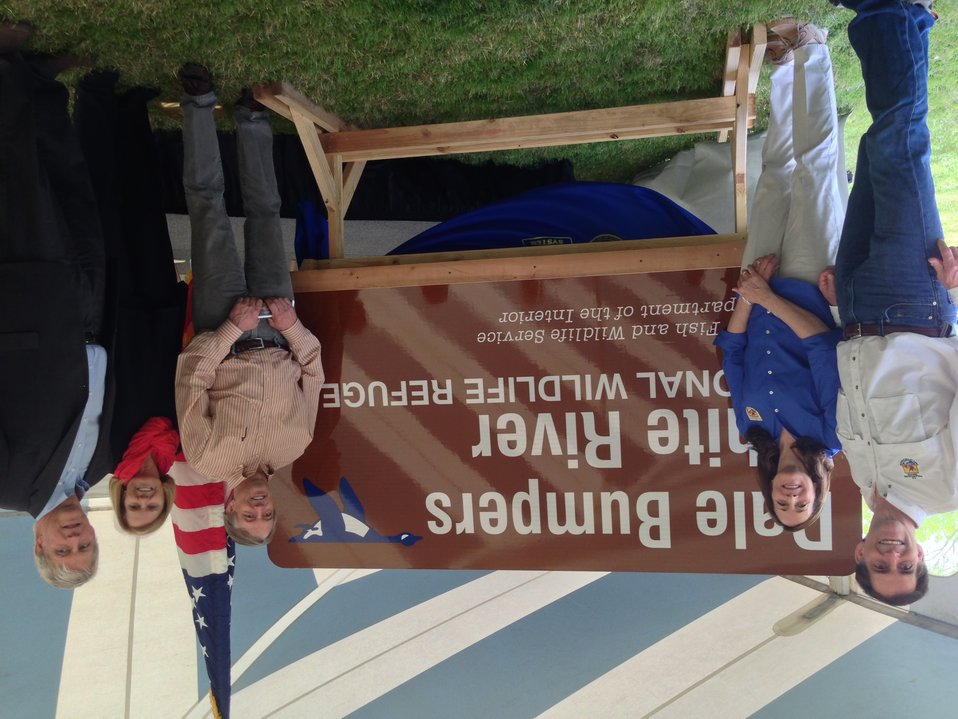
Dan Ashe, Cindy Dohner, and the Bumpers family

At the White River National Wildlife Refuge renaming ceremony in honor of Senator Dale Bumpers.
Credit: USFWS.
www.fws.gov/refuge/white river/